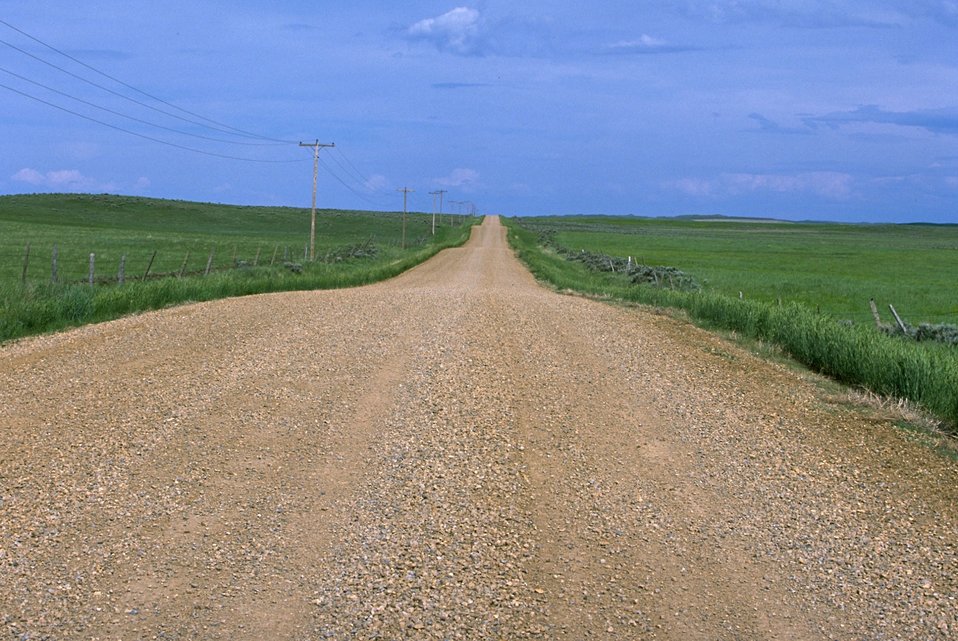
Knox Ridge Road